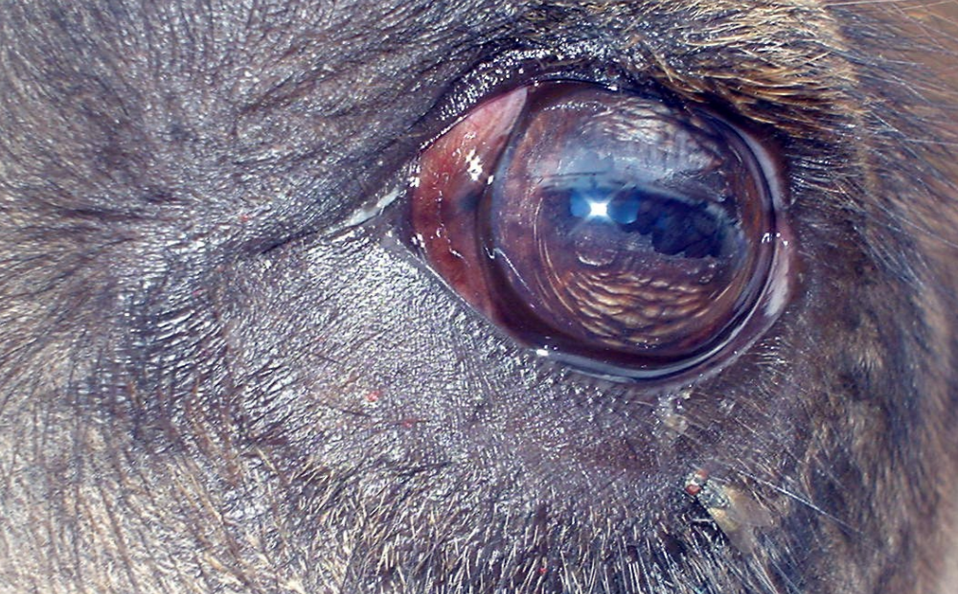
Bactrian Camel eye shared with a fly, likely a member of Calyptratae and potentially a face fly.